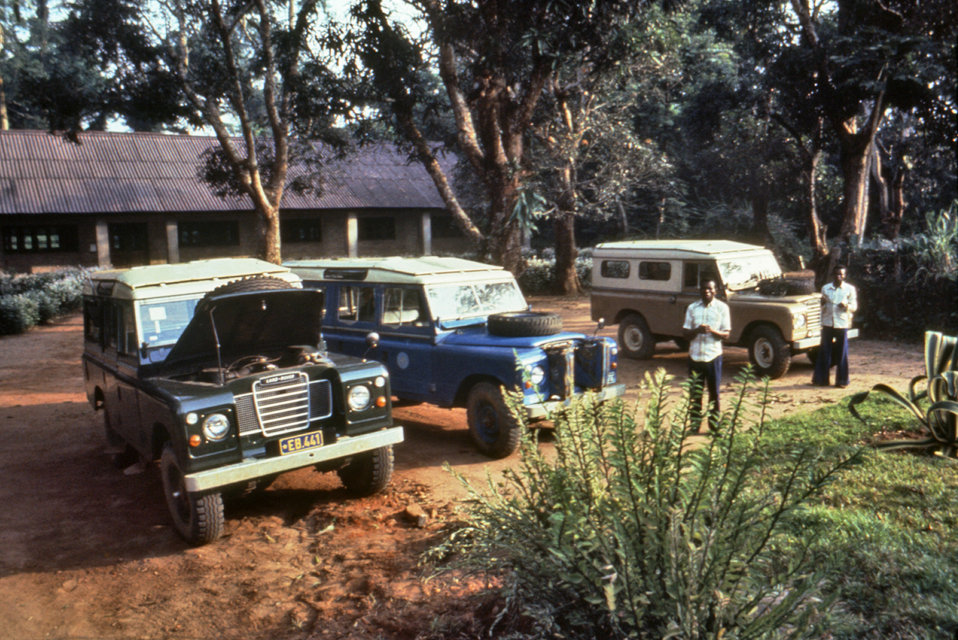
This photograph showed some of the off-road vehicles used to cross the rugged Zairian terrain during the Ebola investigation of 1976.